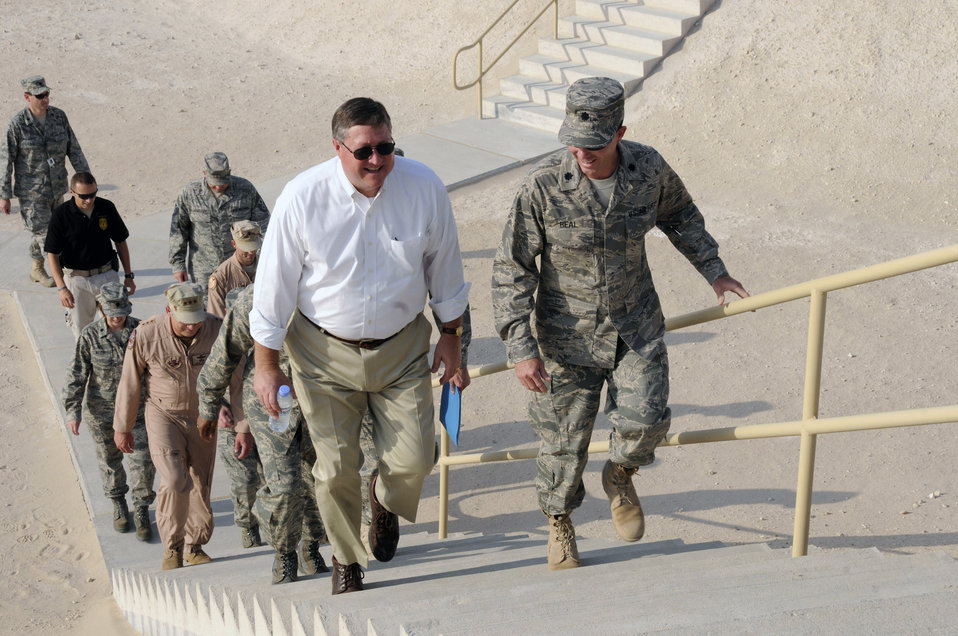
Secretary visits Airmen in Southwest Asia

Lt. Col. Colin Beal (right) escorts Secretary of the Air Force Michael B. Donley to the top of a fuel storage area Oct. 11 at a Southwest Asia air base. The secretary was briefed on ongoing and future construction projects at the base. Colonel Beal is the commander of the 379th Expeditionary Logistics Readiness Squadron.